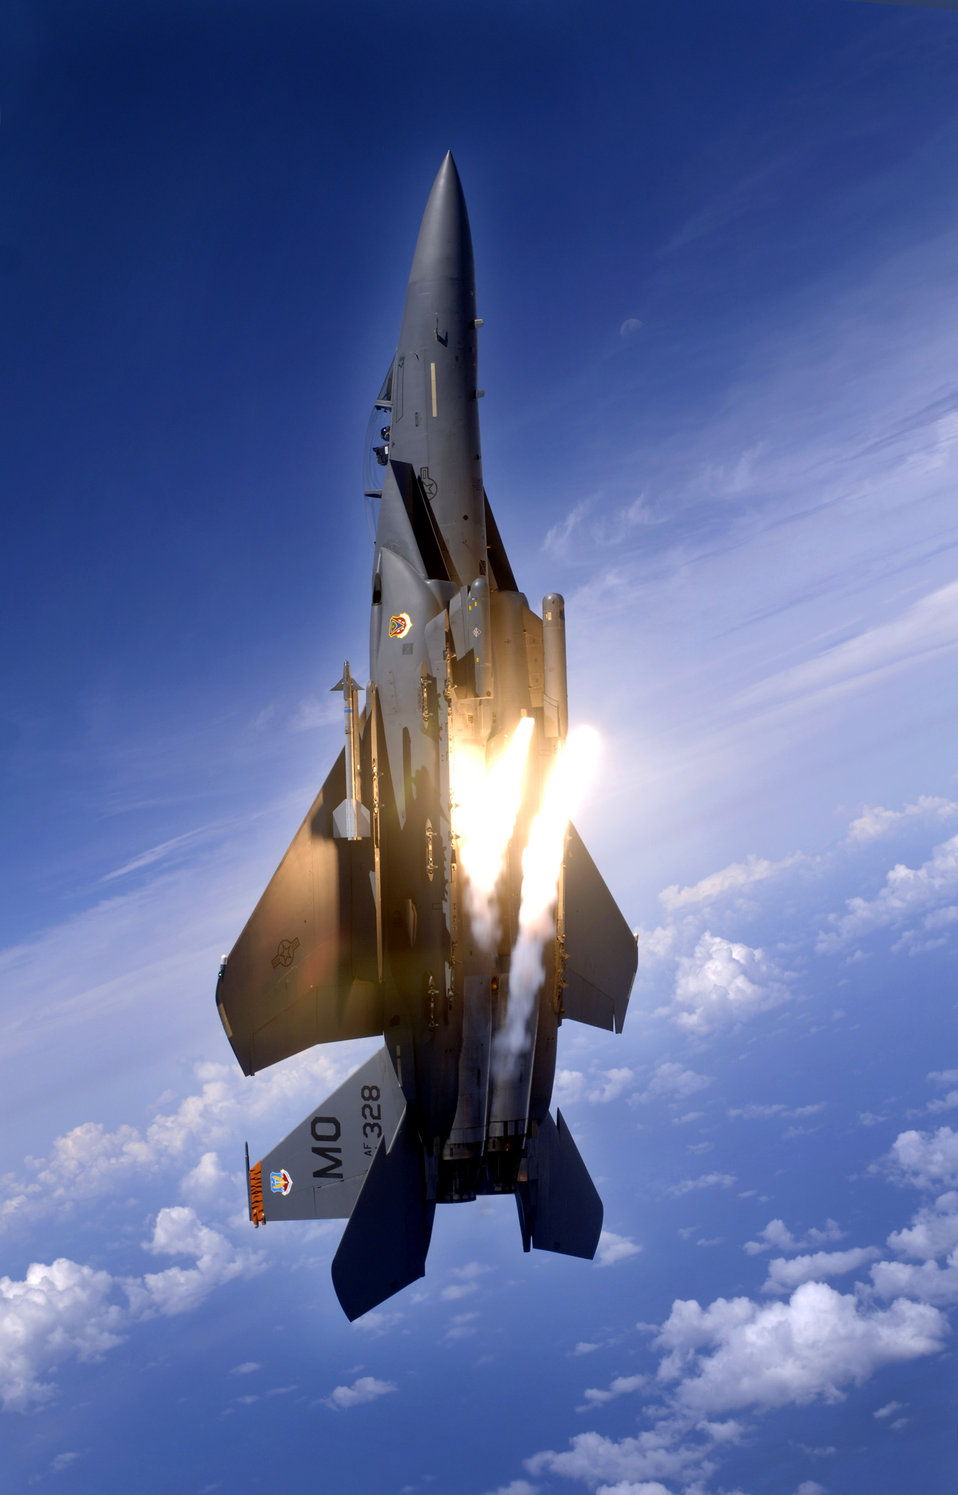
Flying high

OVER GUAM -- An F-15E Strike Eagle from the 391st Expeditionary Fighter Squadron pops flares during an aerial training dog fight here recently. The aircraft is deployed to Andersen Air Force Base, Guam from Mountain Home AFB, Idaho, supporting the U.S. Air Force's continued forward presence in the Western Pacific.